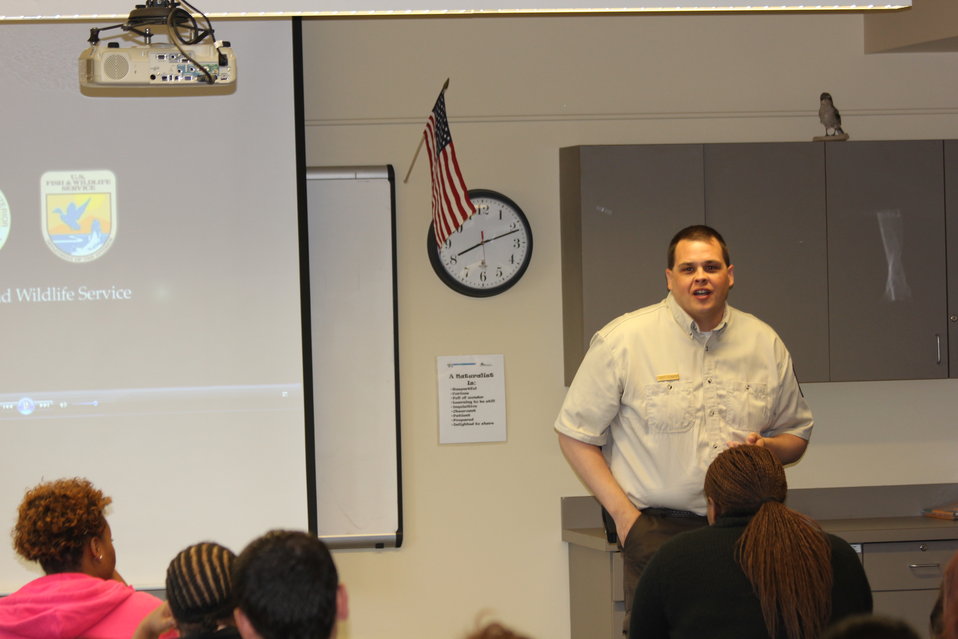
CDIP 2012 Fergus Fall

Matt Conner, Visitor Services at Fergus Falls